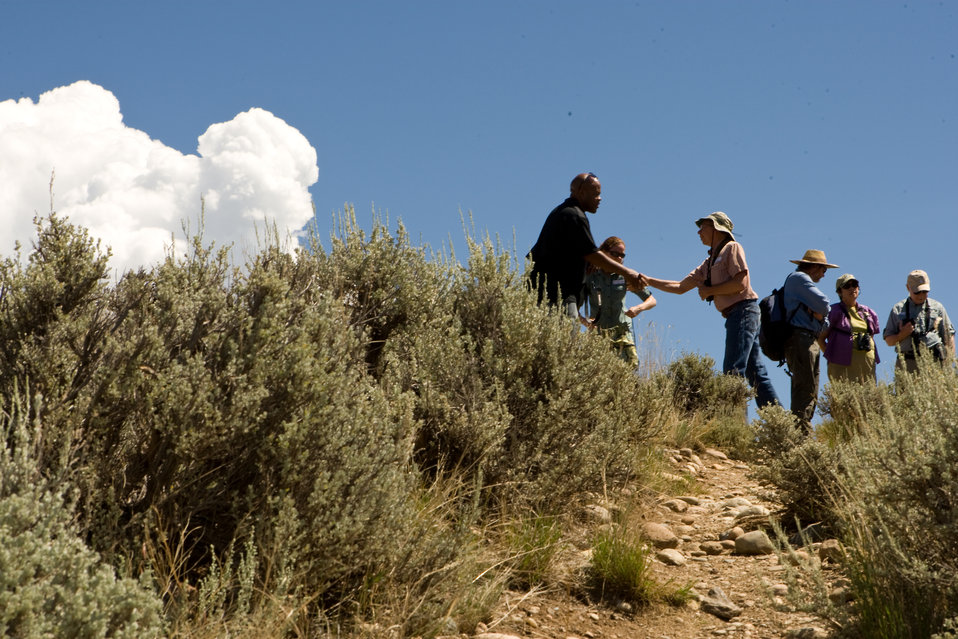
Colorado Rare Plant Conservation Initiative

The Colorado Rare Plant Conservation Initiative (RPCI) is a partnership of 23 statewide and regional agencies, private organizations, and academic institutions working to conserve 121 rare plants in Colorado. As part of these efforts the group developed the Colorado Rare Plant Conservation Strategy, developed Best Management Practices to reduce energy development impacts, addressed climate change, and developed focused strategies for the conservation of individual species at eight priority landscapes. The group has also worked to coordinate volunteer efforts for plant conservation across the state.